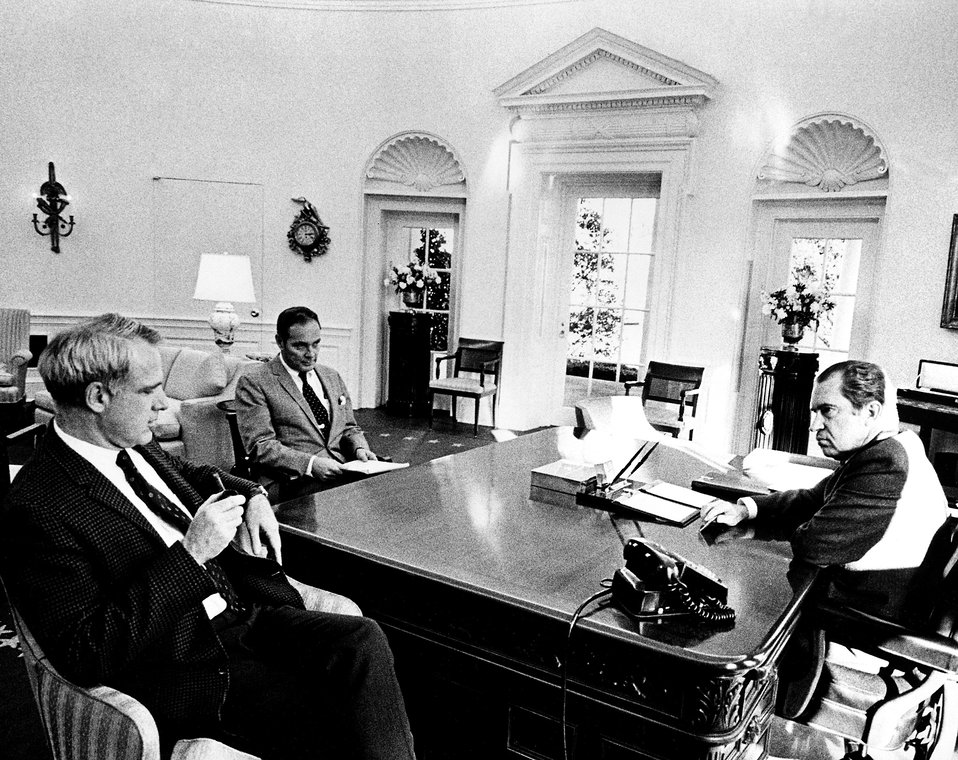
President Richard M. Nixon.